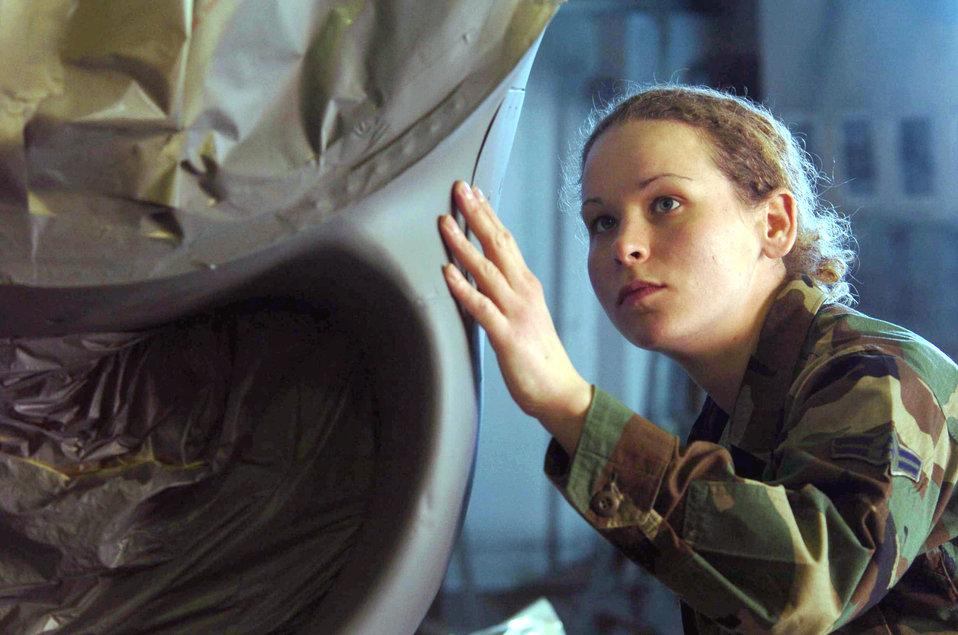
Inspectin' the engine

YOKOTA AIR BASE, Japan -- Airman 1st Class Ashley Maddox inspects a C-130 Hercules aircraft engine after it was painted here. The engines are periodically sanded, primed and painted to prevent corrosion. Airman Maddox is assigned to the 374th Maintenance Group's aircraft structural element flight.